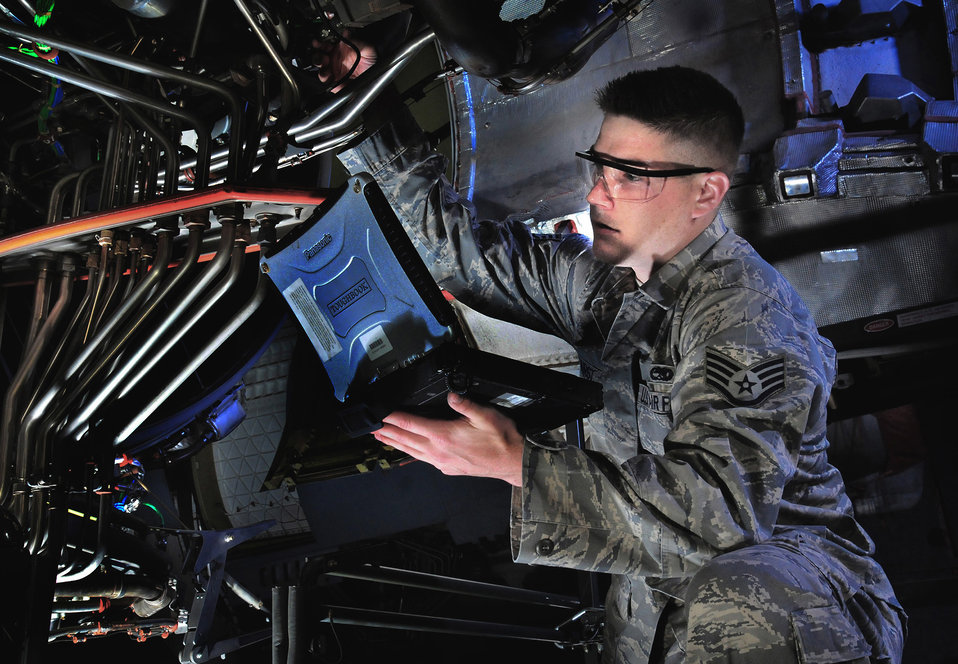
Checking things out one step at a time

Staff Sgt. Jason Hurst references a technical order while inspecting a C-17 Globemaster III engine April 15, 2011, during a biannual home station check at March Air Reserve Base, Calif. Sergeant Hurst is a crew chief assigned to the Air Force Reserve Command's 452nd Maintenance Squadron.